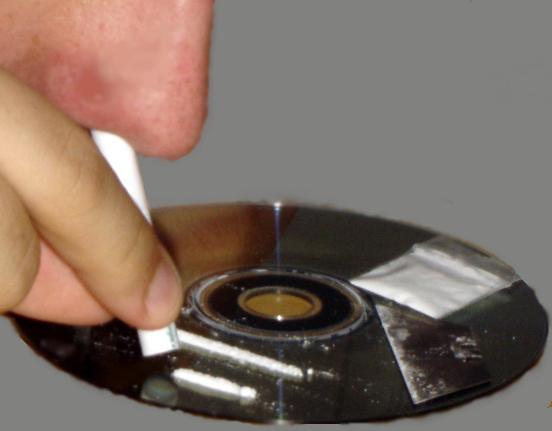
Description = Insufflation of caffeine powder Source = self-made Date = created 1 March 2006 Author = AK7 Permission = Released to Public Domain (self made)